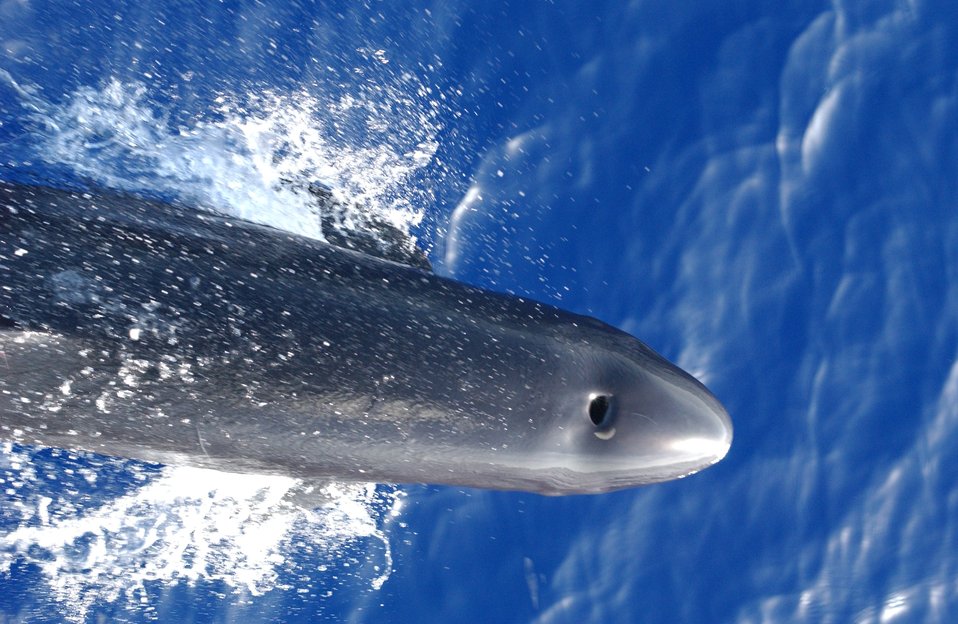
False killer whale